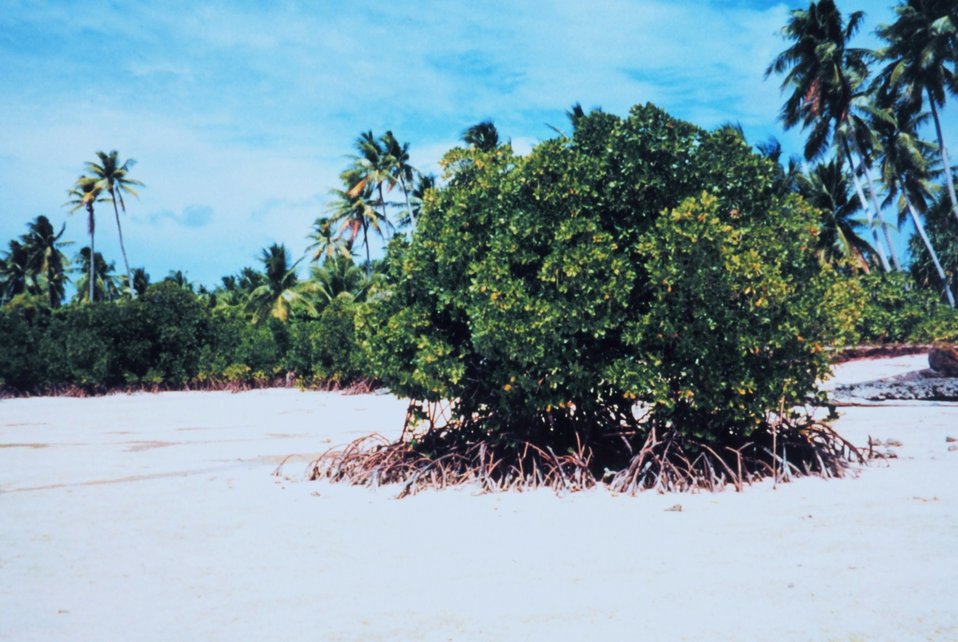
Isolated mangrove on a sandy beach